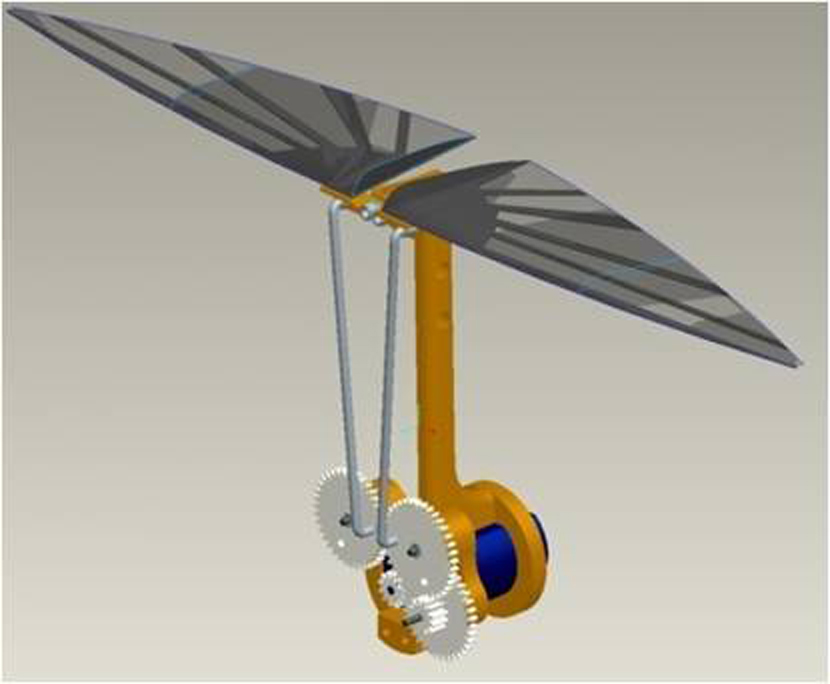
Researchers study bats to enhance micro air vehicles

Researchers from several universities are studying how the biological attributes of flapping and flexible flight demonstrated by birds, bats and insects can improve future micro air vehicle systems. This research has led to the creation of engineering models, such as the one illustrated in this graphic.